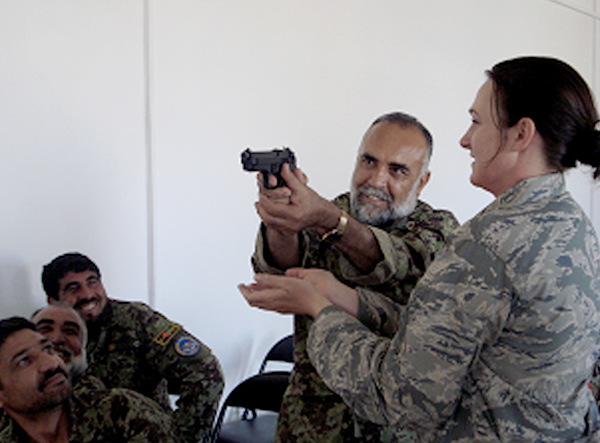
Shindand defenders take aim

Security forces advisers from the 838th Air Expeditionary Advisory Group and Italian air force conduct M9 training for 20 Afghan airmen in Kabul, Afghanistan. The training aimed to provide the officers formal instruction on safety, target engagement, fundamentals, and nomenclature.